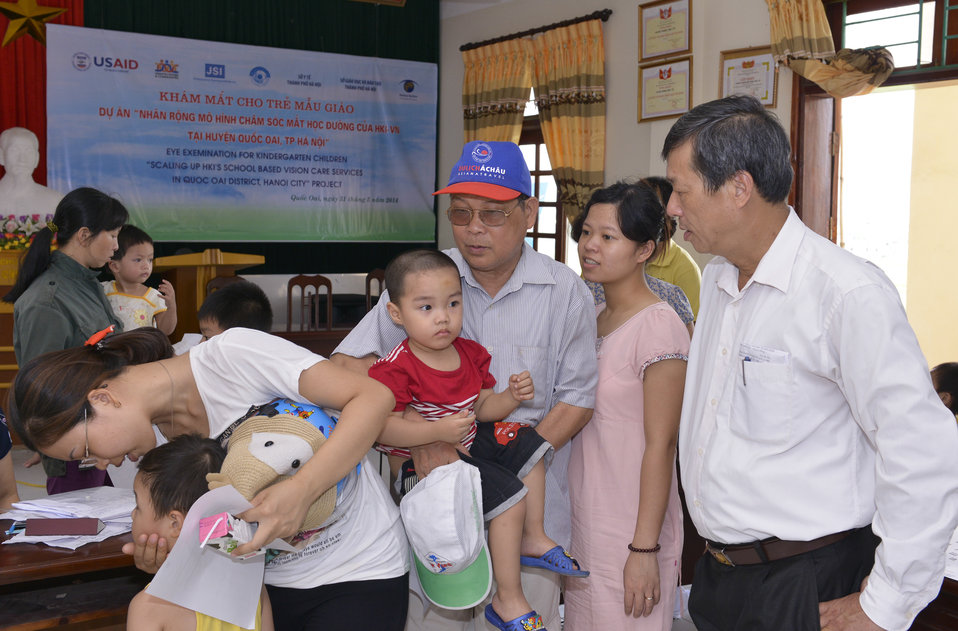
Eye screening for kindergarten children in Quoc Oai district of Hanoi

Quoc Oai, Hanoi. May 31, 2014.